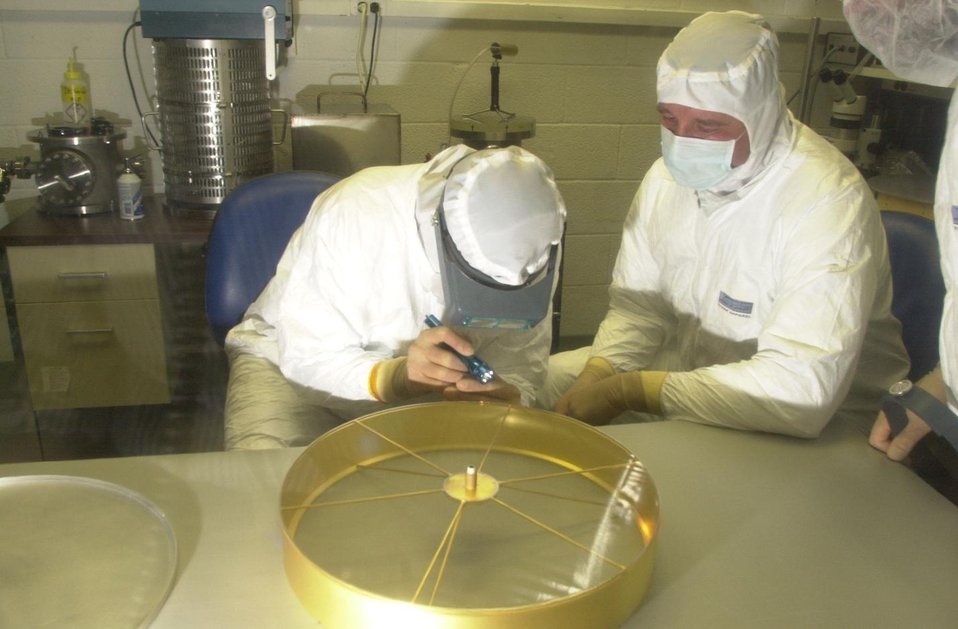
LANL SCIENTISTS INSPECT HIGH VOLTAGE SCREENS STRETCHED ACROSS THE FACE OF THE SOLAR WIND CONCENTRATOR FOR GENESIS SPACECRAFT.

THE SOLAR WIND CONCENTRATOR, ION MONITOR AND ELECTRON MONITOR WERE DESIGNED AND BUILT BY A TEAM OF SCIENTISTS AND ENGINEERS AT LOS ALAMOS NATIONAL LAB FOR THE GENESIS SPACECRAFT. THE SOLAR WIND CONCENTRATOR IS DESIGNED TO COLLECT A HIGH CONCENTRATION OF OXYGEN AND RETURN THE SAMPLE TO EARTH FOR ANALYSIS. THE ION AND ELECTRON MONITORS INSTANTANEOUSLY DETERMINE WHICH TYPE OF SOLAR WIND IS PASSING THE SPACECRAFT AND TRANSLATE THE KNOWLEDGE INTO ACTIONS FOR THE SOLAR WIND CONCENTRATOR AND SOLAR WIND COLLECTOR ARRAYS.